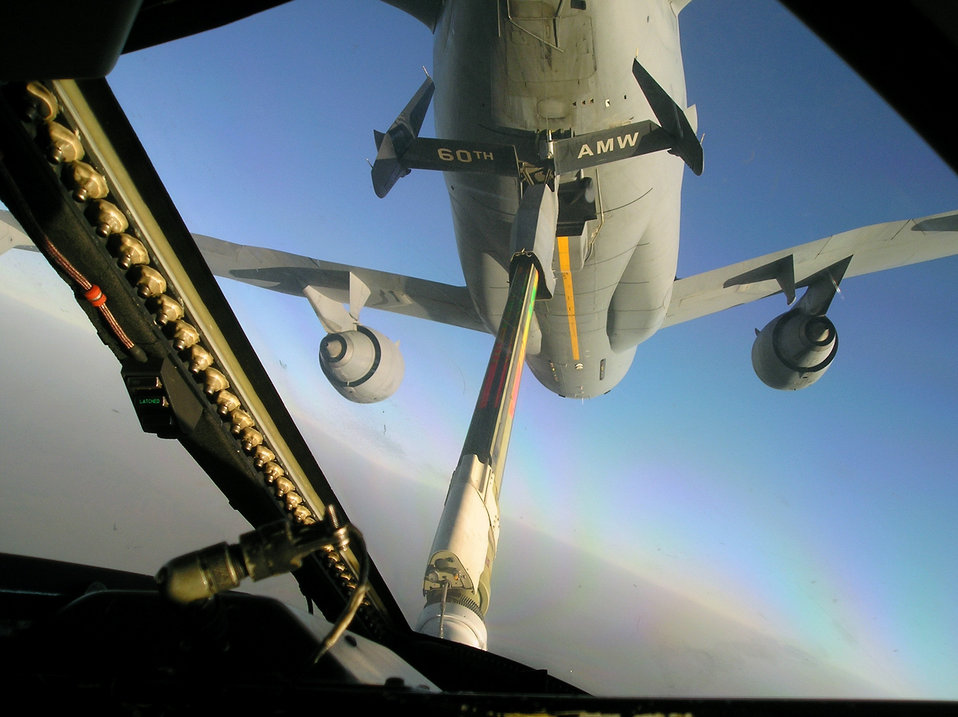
Combat air refueling over Afghanistan

A KC-10 Extender from the 908th Expeditionary Air Refueling Squadron refuels an aircraft Feb. 1, 2010, over Afghanistan, during Operation Enduring Freedom air refueling operations. The air refueling capability of the KC-10 in combat operations allows fighters to provide close-air support for